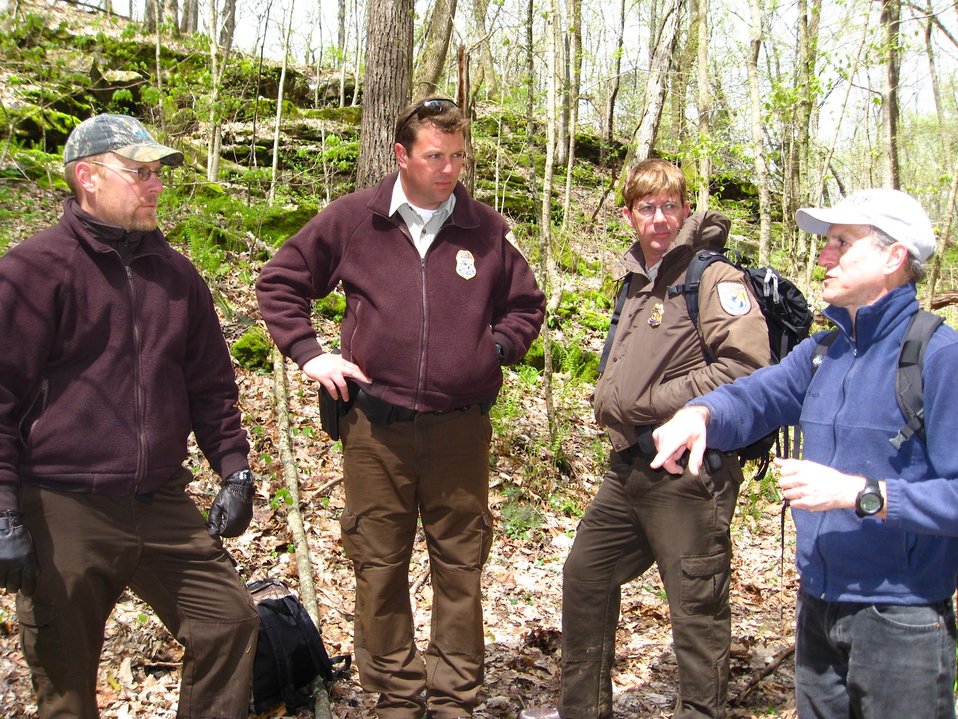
Officer Jason Vehrs

National Wildlife Refuge System law enforcement officer Jason Vehrs, second from left, meets at Fern Cave Refuge in Alabama with, from left to right, refuge manager Rob Hurt, Brian Gourgues and refuge volunteer Steve Pitts.